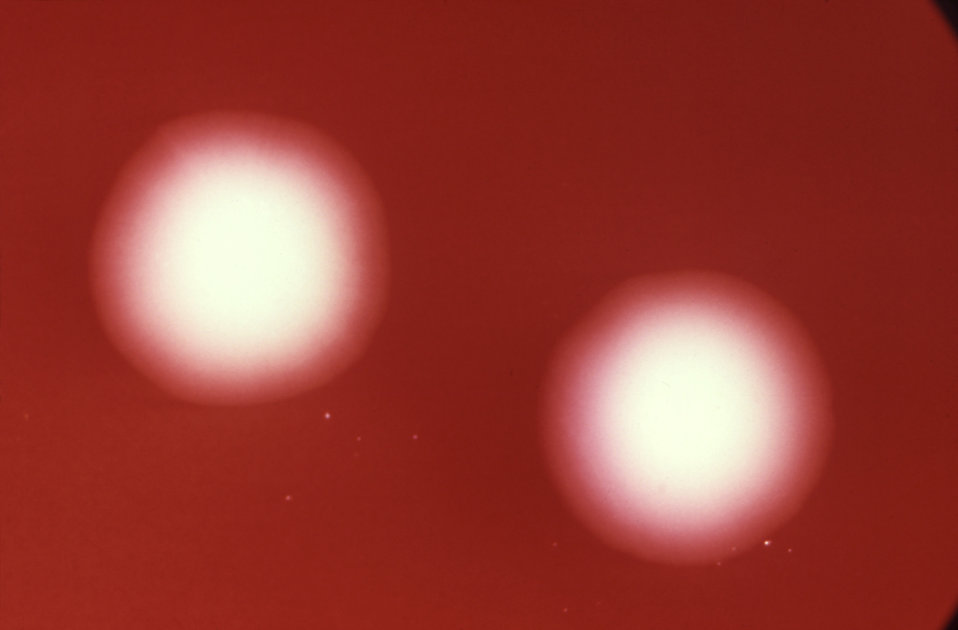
After 72 hours of growth, and under a relatively low magnification of 4.5X, this blood agar plate (BAP) produced two colonies of Bifidobacterium eriksonii bacteria.